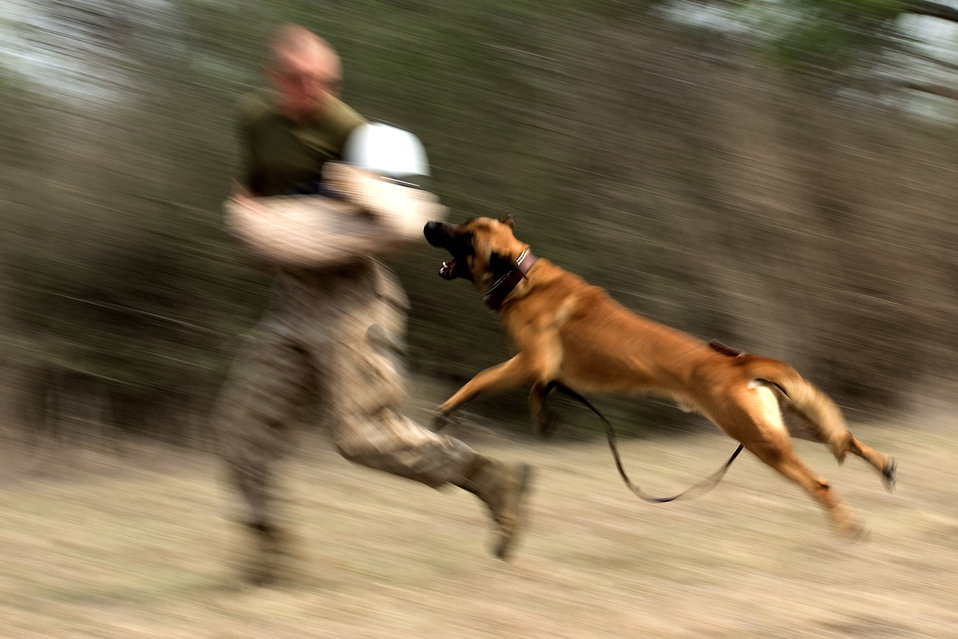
Training for military working dogs

A military working dog attacks his handler on command at the training grounds of Lackland Air Force Base, Texas. Military working dogs are enrolled in a 60- to 90-day training program where they are taught to detect explosives and drugs. They are also taught deterrence training and how to protect their handler.